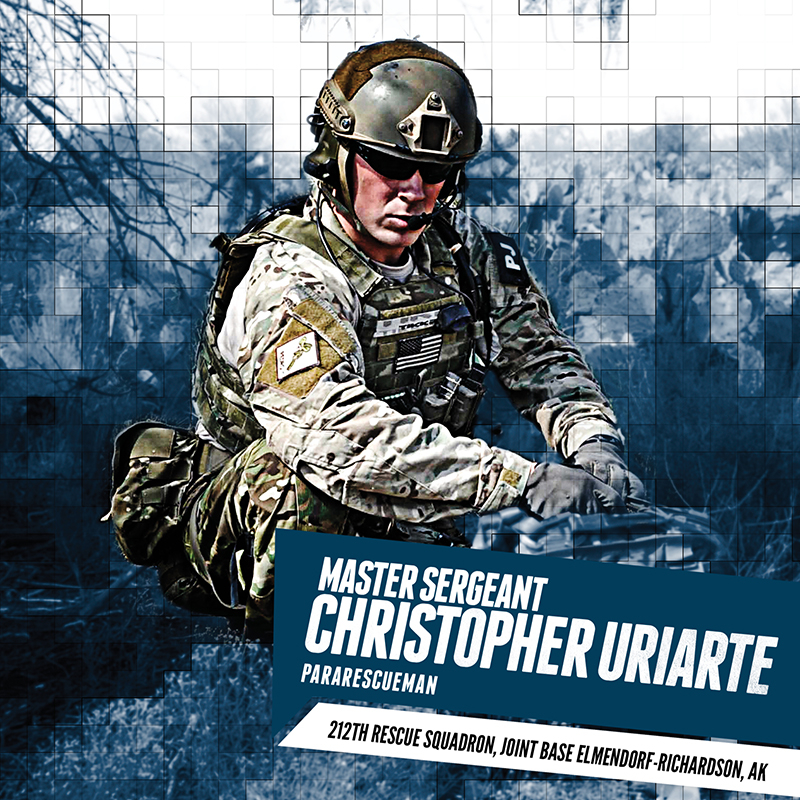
Portraits in Courage

Master Sgt. Christopher Uriarte is one of 20 Airmen highlighted in the new Profiles in Courage. Uriarte is a pararescueman stationed with the 212th Rescue Squadron at Joint Base Elmendorf-Richardson, Alaska, whose heroic actions saved the lives of passengers on a downed civilian aircraft in the remote Chugach Mountains.